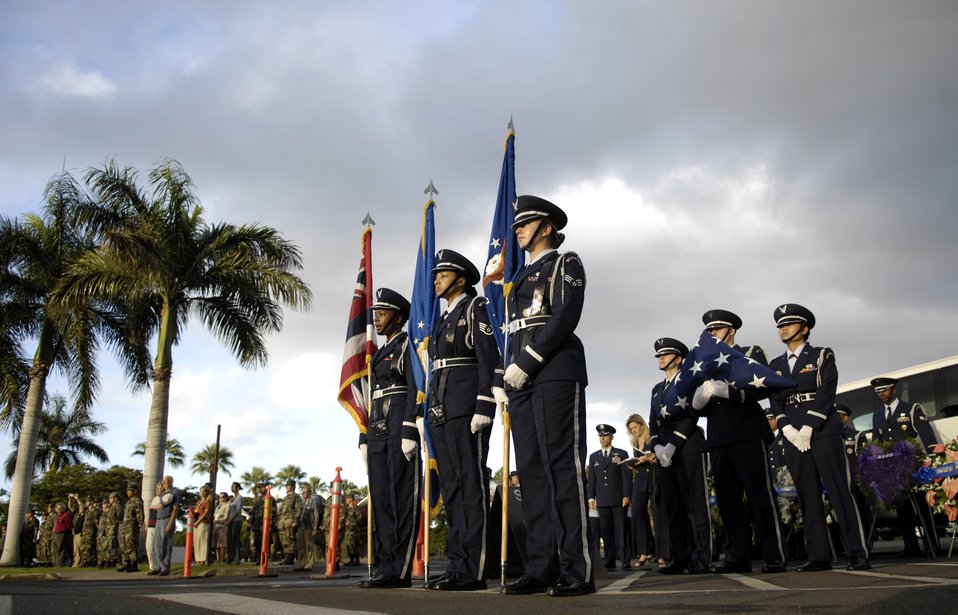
Remembering the Pearl Harbor attack

A ceremony at the Hickam Air Force Base, Hawaii, flagpole was held Dec. 7 to honor the 189 who died and 303 who were wounded during a surprise attack by Japanese fighter aircraft 65 years ago. The consolidated barracks, what is now the Pacific Air Forces headquarters, was reportedly the most bombed building on Oahu.